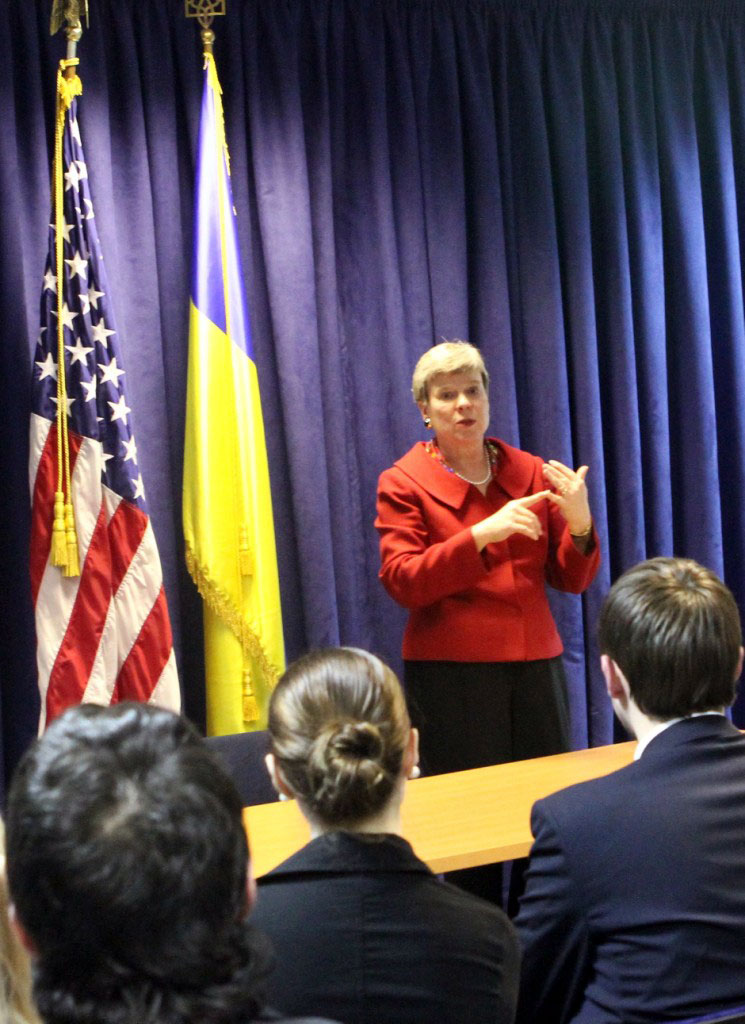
Assistant Secretary Gottemoeller Speaks to Students

U.S. Assistant Secretary of State for the Bureau of Arms Control, Verification and Compliance Rose Gottemoeller speaks to students in Kyiv, Ukraine, on February 7, 2011.